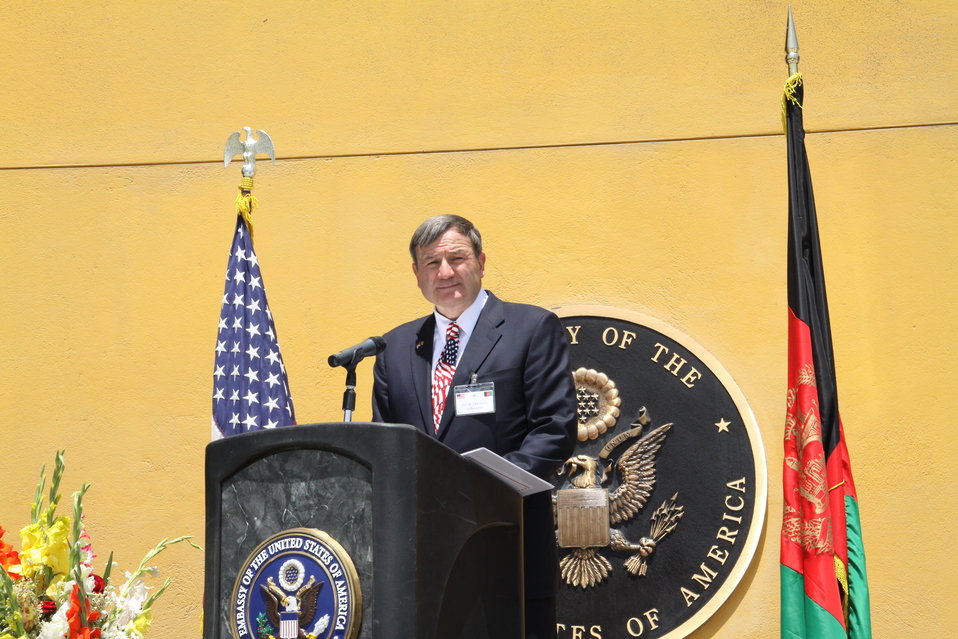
Kabul Official July 4th Celebration